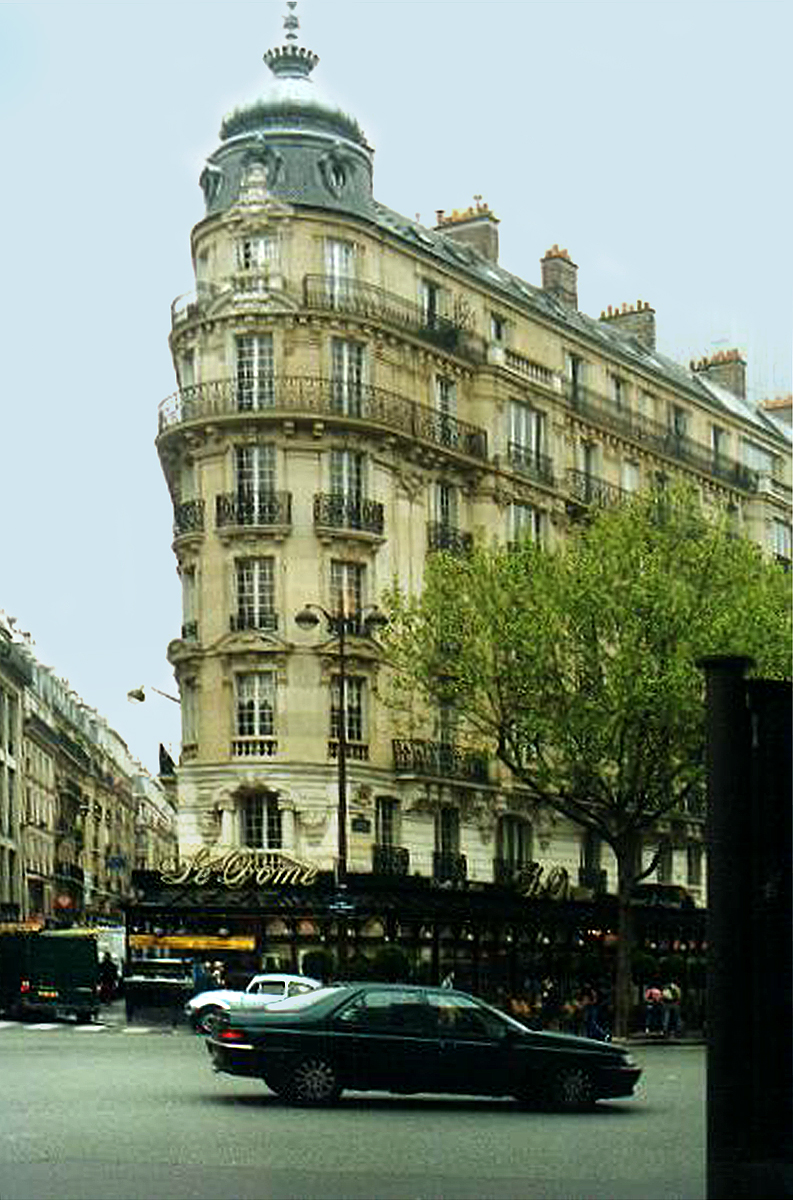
took the picture myself, last summer